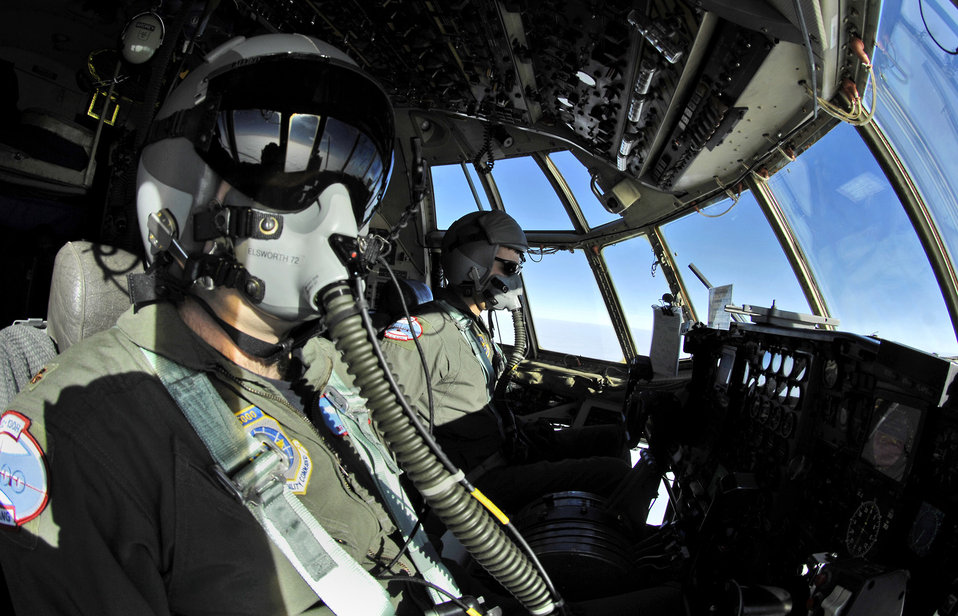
Ice, ice baby!

Maj. Bryan Elsworth and Capt. Erik Srokowski approach the South Pole, Antarctica, Nov. 26 in their LC-130 Hercules during Operation Deep Freeze. Ski-equipped LC-130s, crews and support personnel from the New York Air National Guard's 109th Airlift Wing are supporting the 13th Air Force-led Joint Task Force Support Forces Antarctica, Operation Deep Freeze. Operation Deep Freeze is a unique joint and total-force mission that has supported the National Science Foundation and U.S. Antarctic Program that began in 1955.